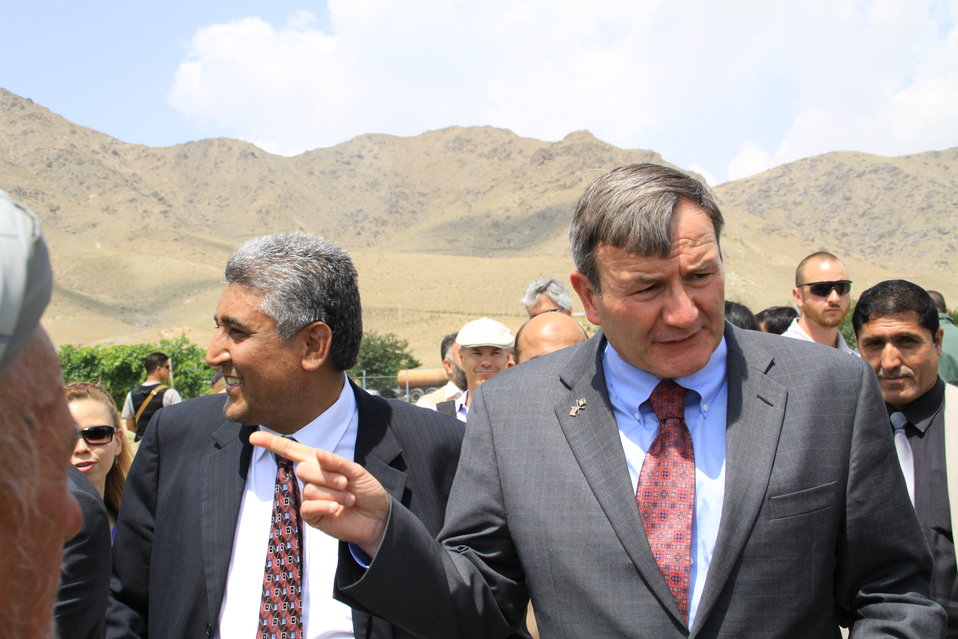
Badam Bagh Farm